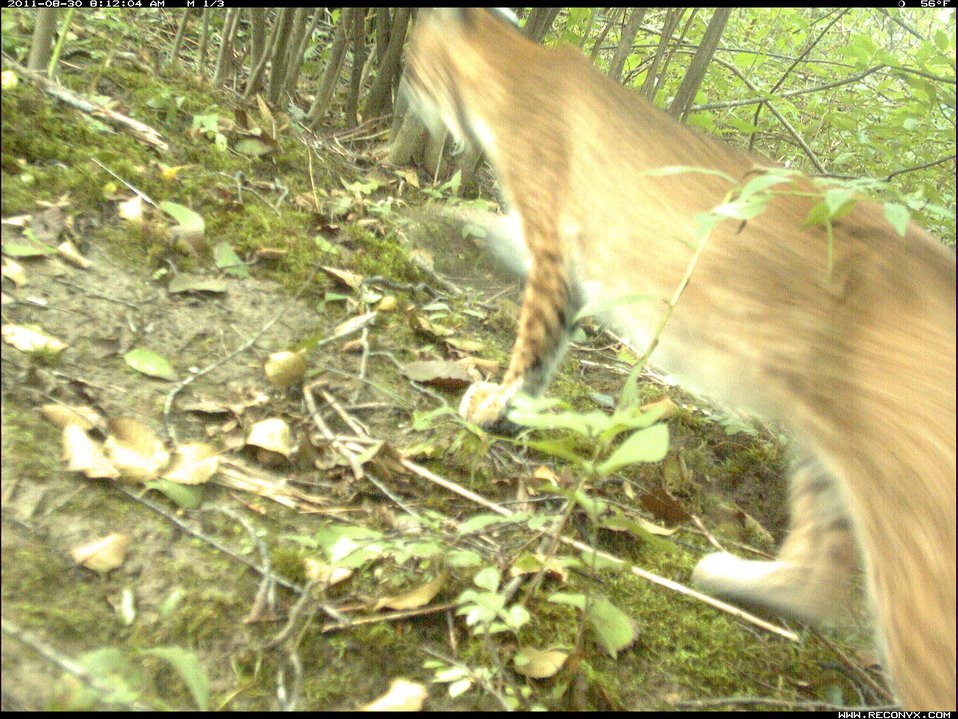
Bobcat

We finally captured an image of a bobcat!